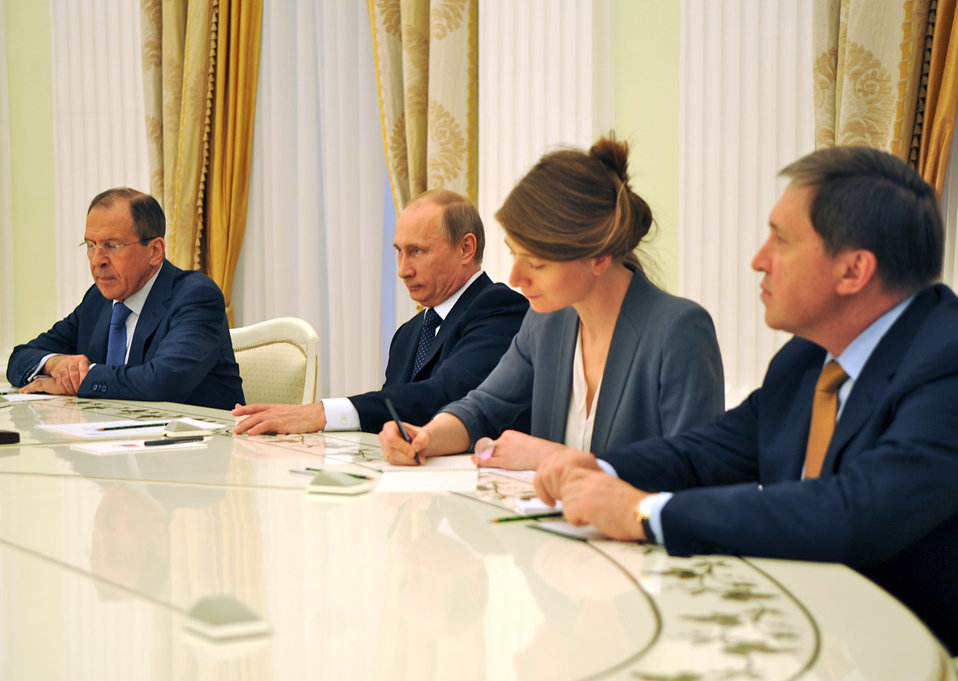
Secretary Kerry Meets With Russian President Putin and Foreign Minister Lavrov

U.S. Secretary of State John Kerry, accompanied by U.S. Ambassador to Russia Michael McFaul, meets with Russian President Vladimir Putin, second from left, and Russian Foreign Minister Sergey Lavrov, far left, in Moscow, Russia, on May 7, 2013.